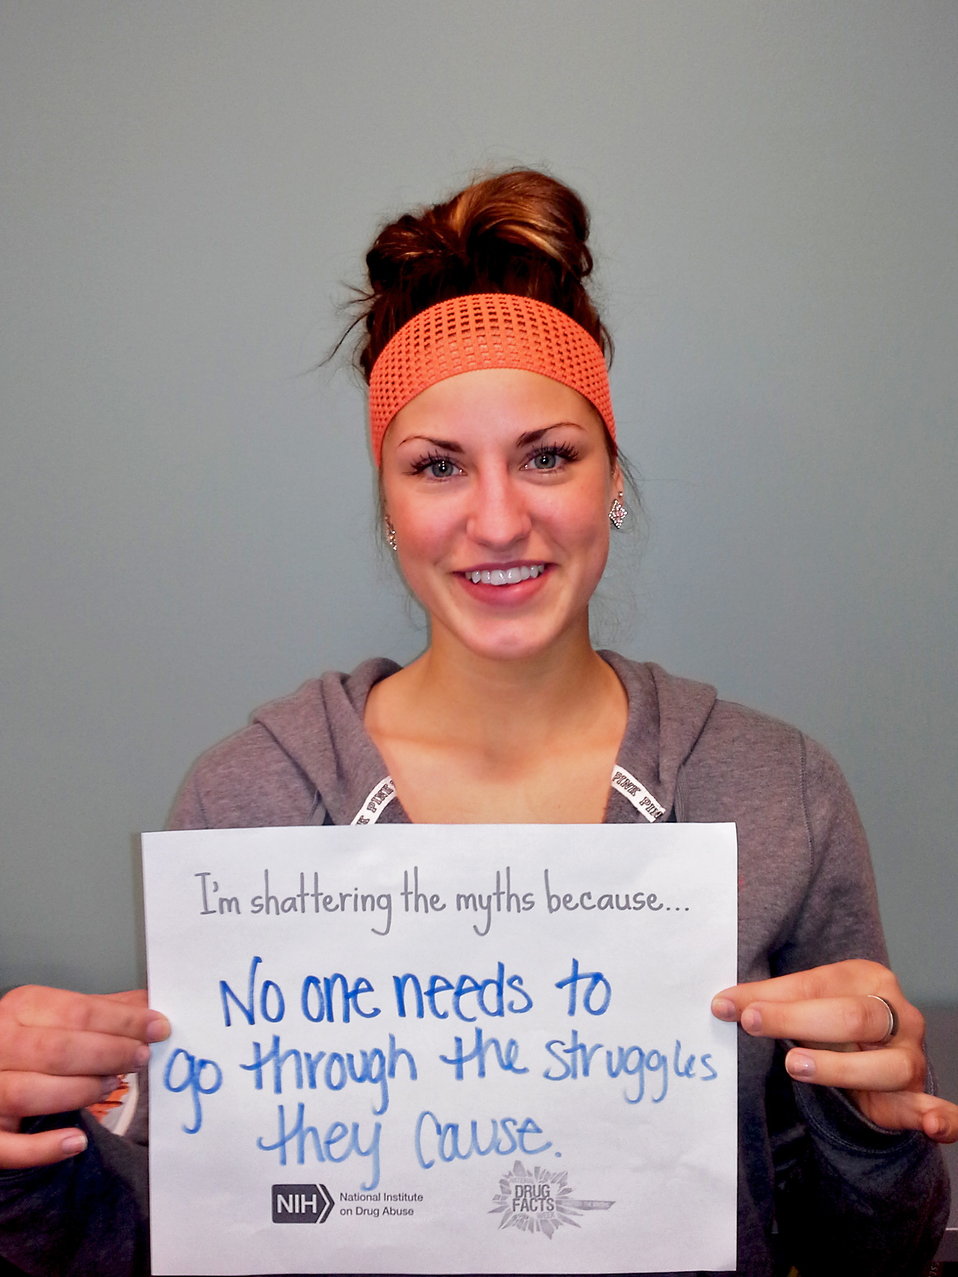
Shattering the Myths campaign in Winona, Minnesota